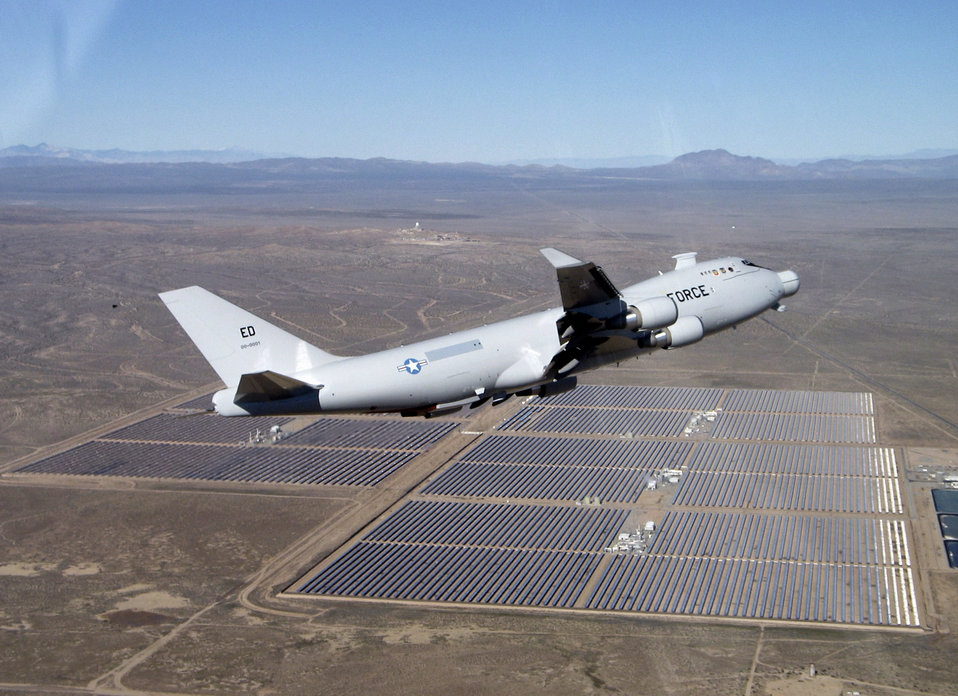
Airborne Laser conducts extended flight test

The YAL-1A Airborne Laser aircraft flew over the range at Edwards Air Force Base, Calif, Dec. 9, 2004, while officials recertified the aircraft's airworthiness before resuming testing of the system's laser beam control system. The aircraft had been out of service for modifications.